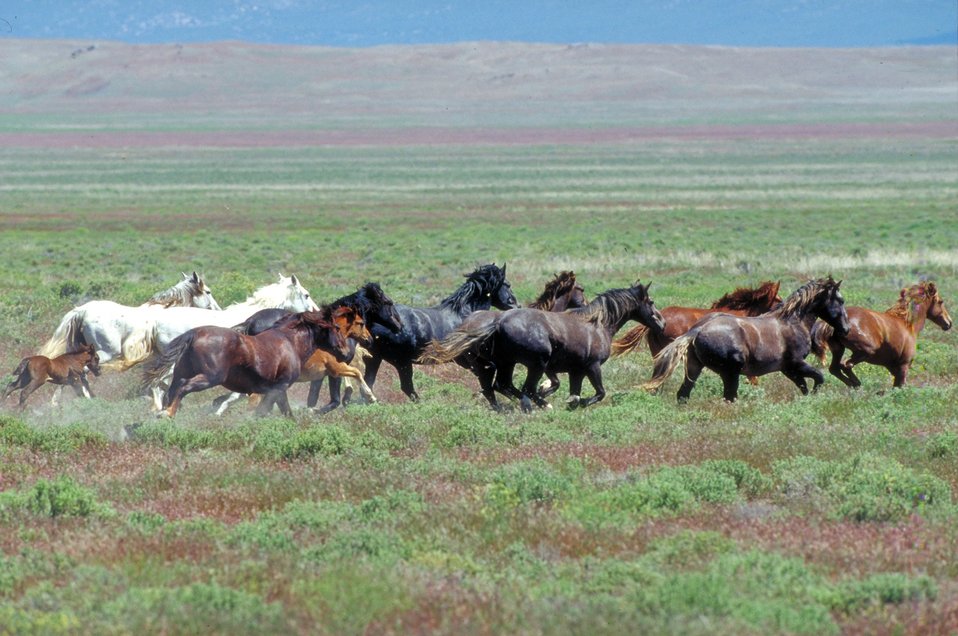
Onaqui Herd near Dugway, Utah.